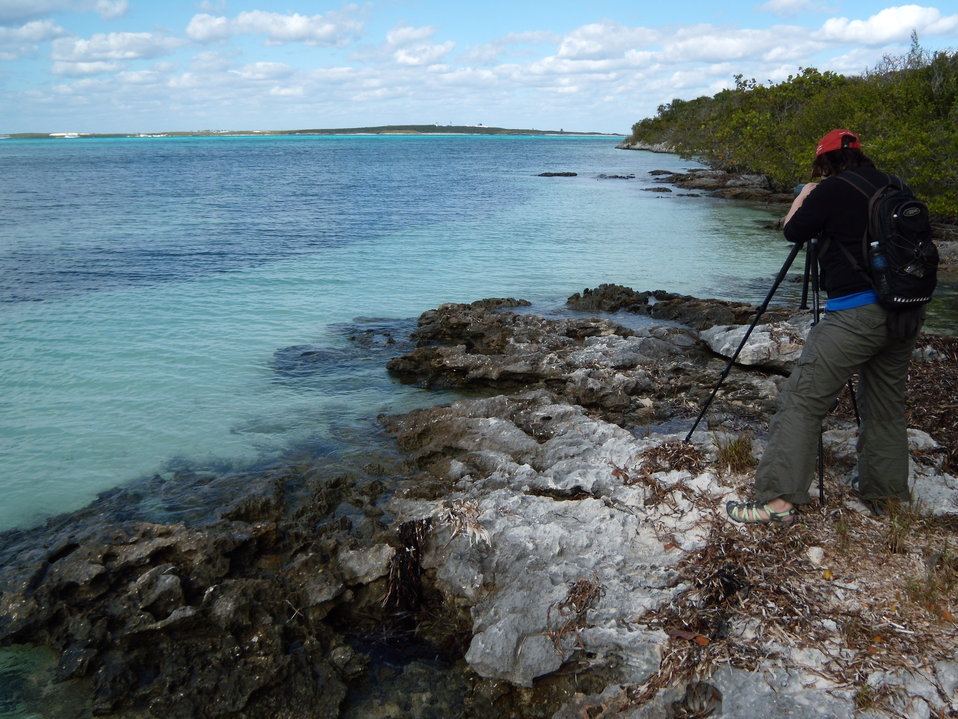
Scanning for birds

Sue Abbott, Bird Studies Canada, scanning for birds at Berry Islands.